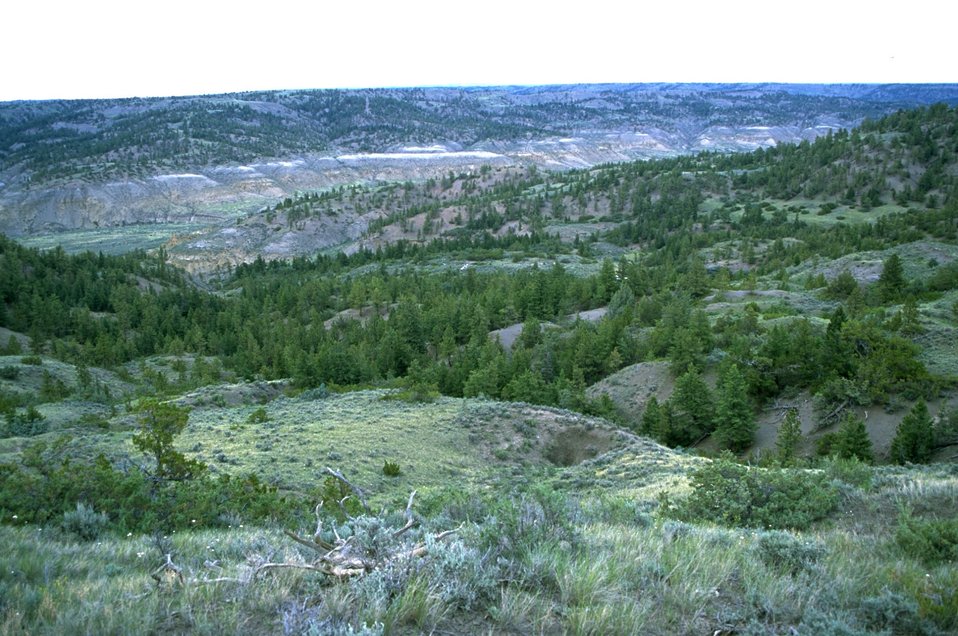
The Missouri Breaks